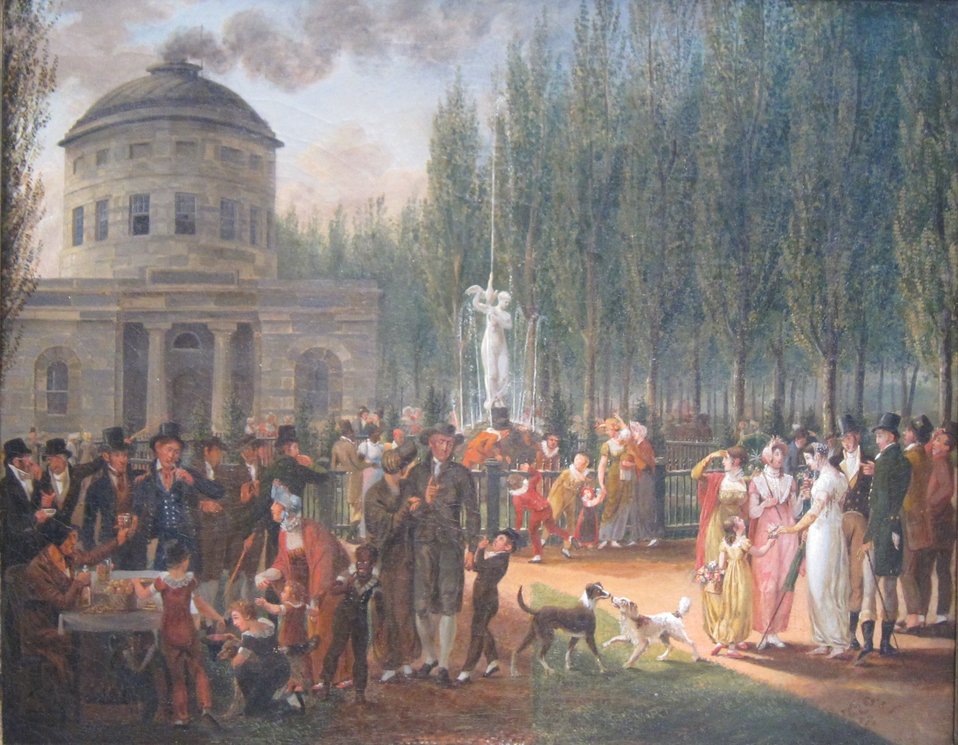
Fourth of July in [Philadelphia’s] Center Square, oil on canvas painting by John Lewis Krimmel, by 1812, Pennsylvania Academy of the Fine Arts. Rush's Water Nymph and Bittern (1809) is the fountain statue at center.